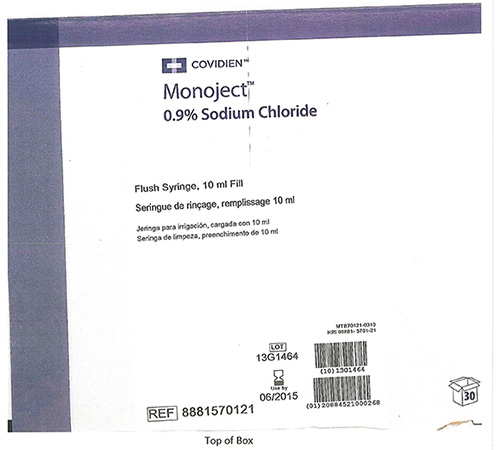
RECALLED – Monoject Prefill Flush Syringes

August 19, 2013 – Product Recall – Covidien Initiates a Voluntary Recall of Certain Lots of Monoject™ Prefill Flush Syringes Sold in the United States and Bermuda.